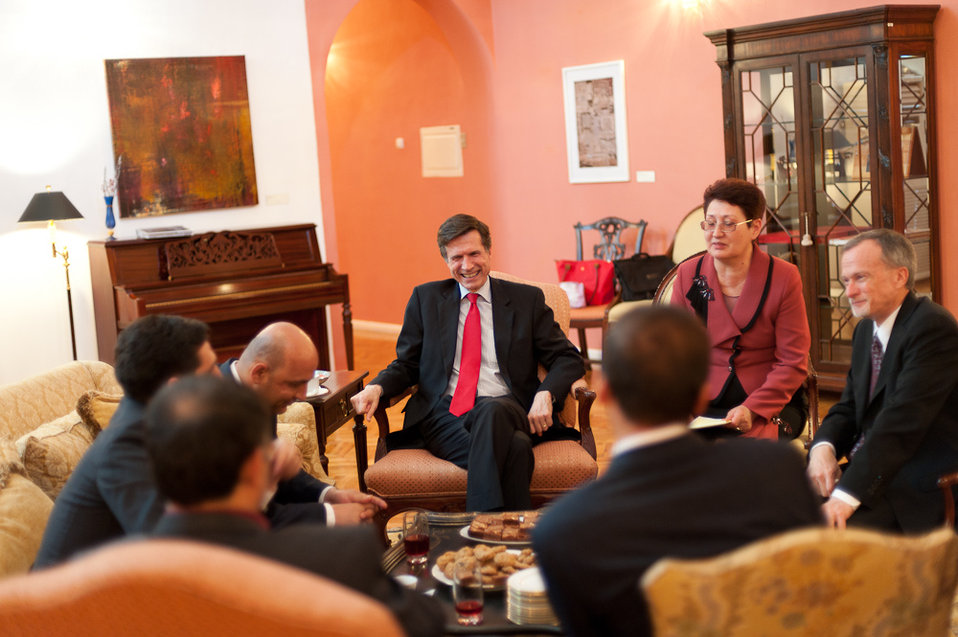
Assistant Secretary Blake Leads U.S. Government-Interagency Delegation to U.S.-Tajikistan Annual BIlateral Consultations

U.S. Assistant Secretary of State for South and Central Asian Affairs, Robert O. Blake, Jr. leads the U.S. government-interagency delegation to the second U.S. - Tajikistan Annual Bilateral Consultations in Dushanbe, Tajikistan, April 11 - 12, 2011. [Damian Wampler/ State Department photo/ Public Domain]